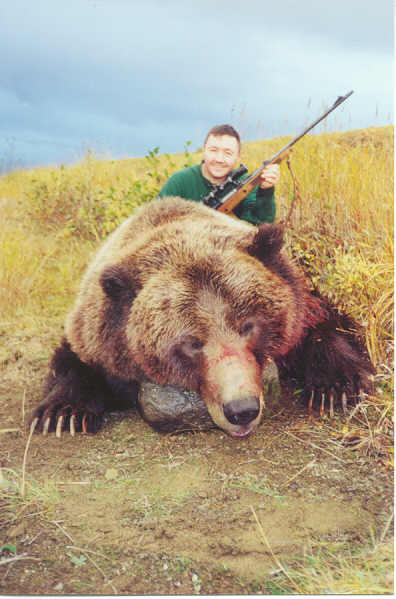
Bear Hunting

Bear hunter Thomas Pelfrey with a nice brown bear taken on Becharof NWR. Tom used a.Sako 375 H&H magnum and Nosler 300 gr. Safari bullets.